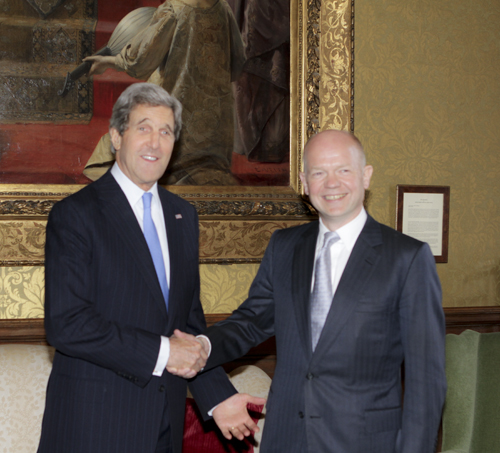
Secretary Kerry Shakes Hands with UK Foreign Secretary William Hague

U.S. Secretary of State John Kerry shakes hands with UK Foreign Secretary William Hague at the Foreign and Commonwealth Office in London, United Kingdom, April 10, 2013.